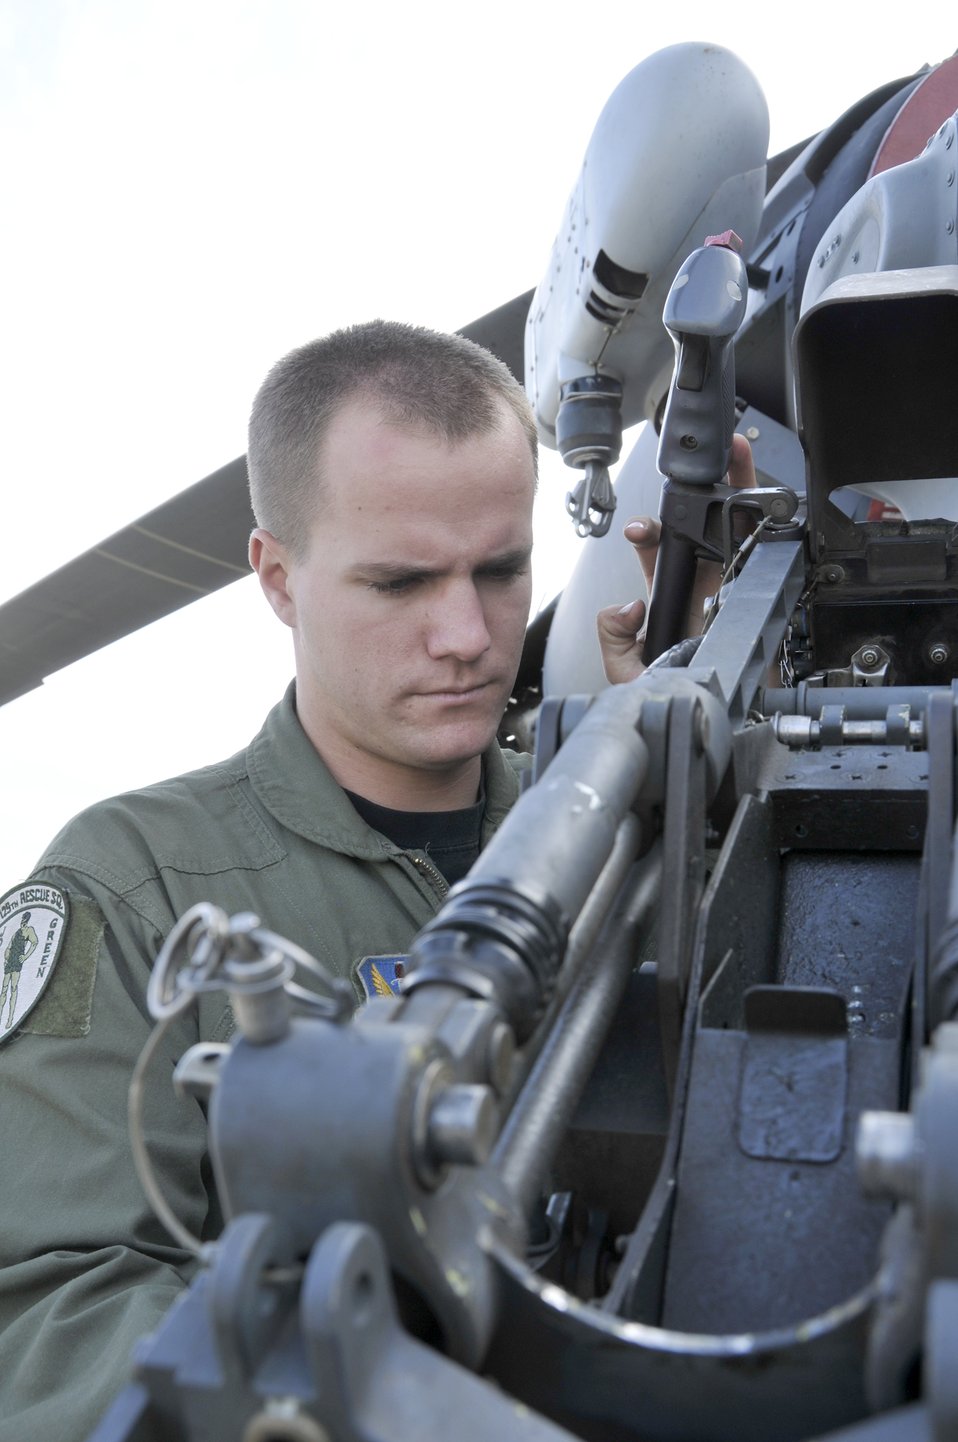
California Coast 'Guard'

Senior Airman Jacob Ellwood checks all systems as he readies a HH-60G Pave Hawk helicopter for a mission Nov. 6, 2010, at Moffett Federal Airfield, Calif. Airman Ellwood is a flight engineer assigned to the California Air National Guard's 129th Rescue Squadron.